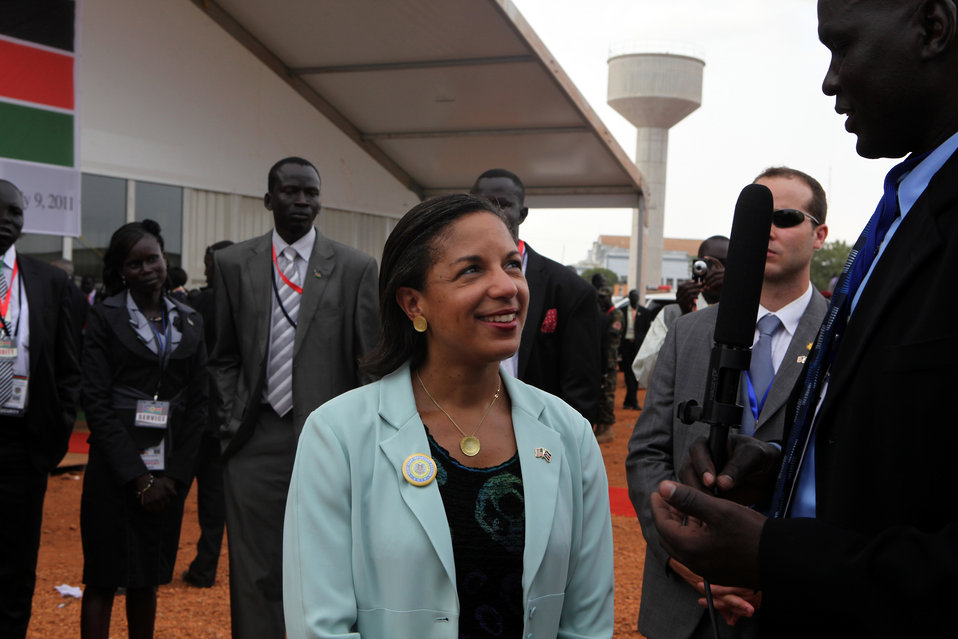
South Sudan Independence Day

Ambassador Susan E. Rice, U.S. Permanent Representative to the United Nations speaks to South Sudan Television (SSTV), during the Republic of South Sudan Independence Day celebrations in Juba, South Sudan on July 9, 2011.